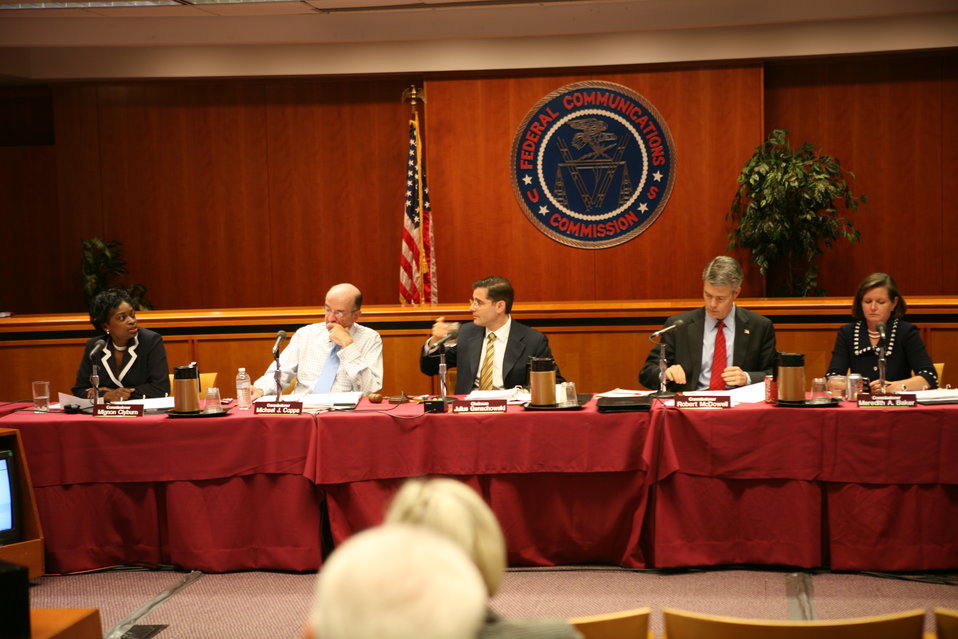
Broadband Midterm Review 9-29-09